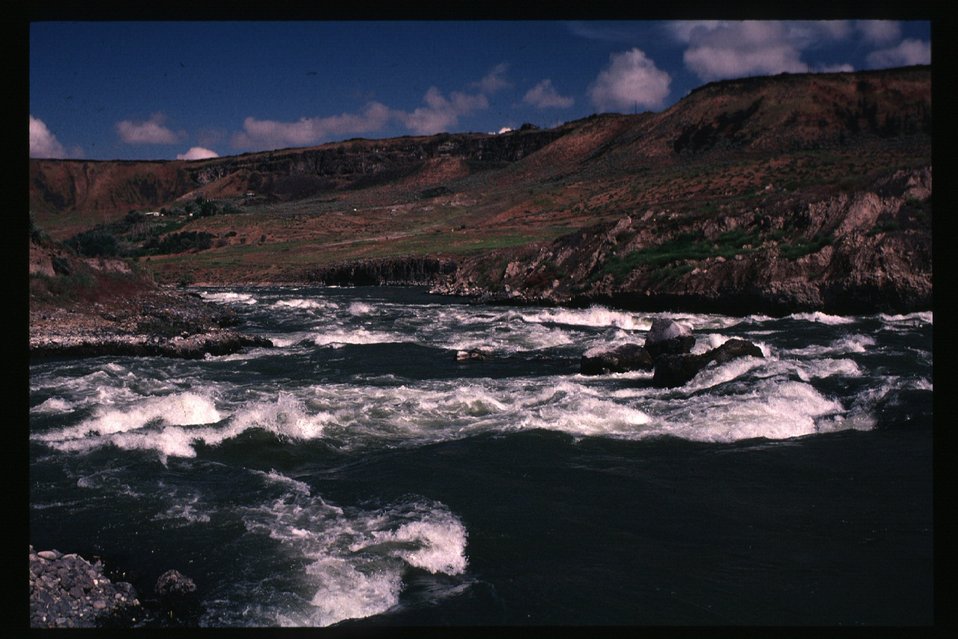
Water falls Rapids Recreation Scenic Snake River Jarbidge Field Office LSRD Lower Snake River District